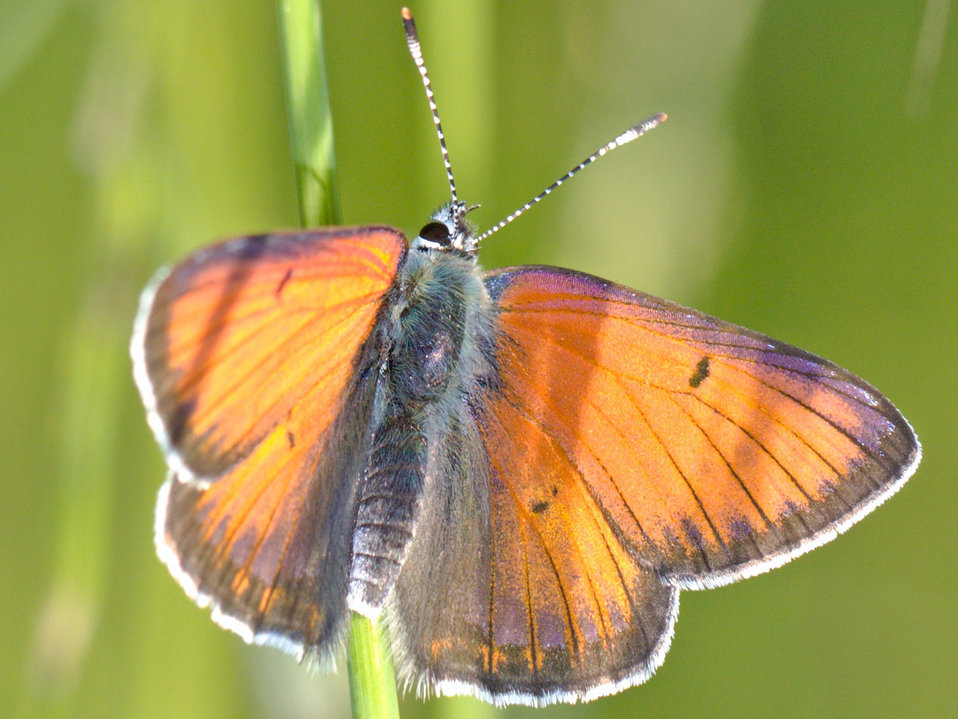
I am resting

Nice butterfly in grass.